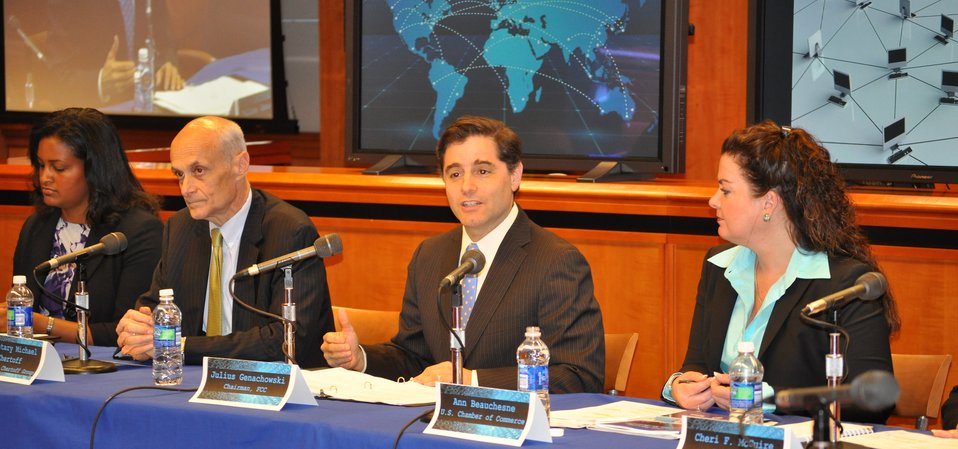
Cybersecurity 5-16

Cybersecurity for Small Business Roundtable; May 16, 2011